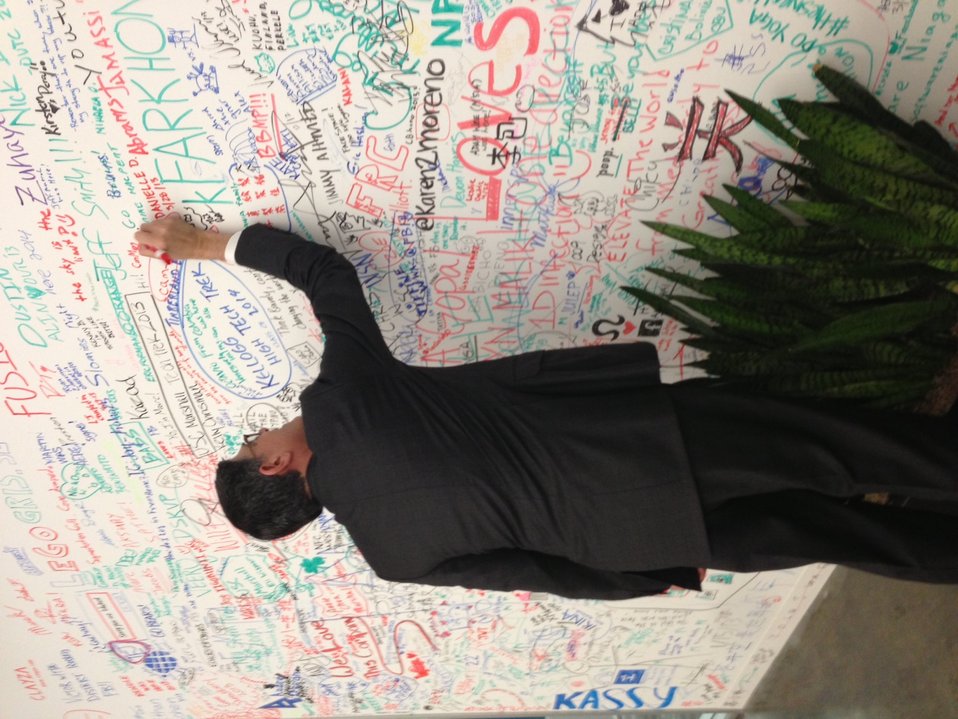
Visit to Facebook headquarters

August 22, 2013 - Secretary Lew signs the wall at Facebook headquarters in Menlo Park, CA, during a visit where he participated in a roundtable with local business leaders.